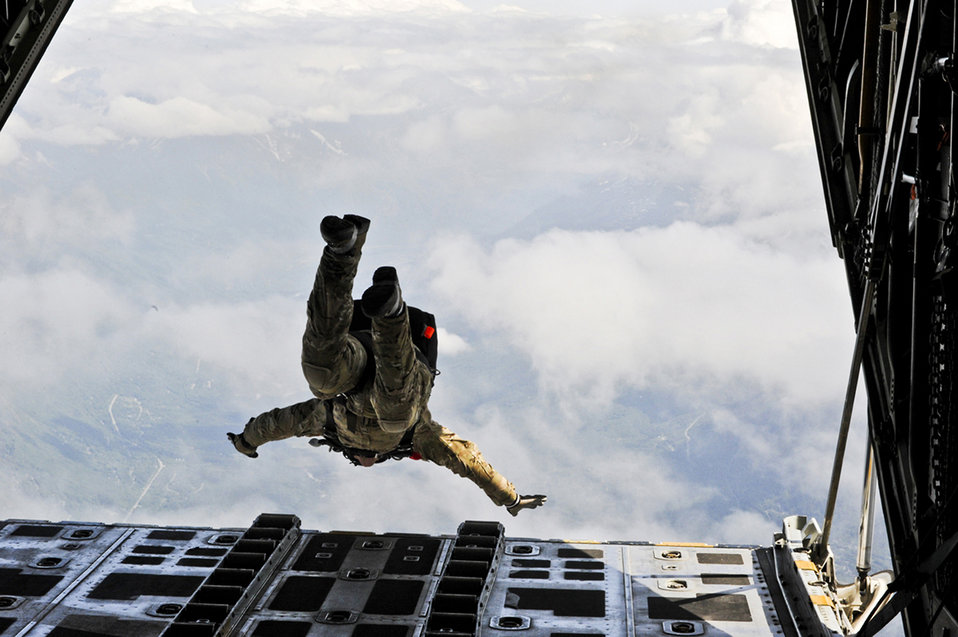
Air Force Week in Photos for July 08, 2011, feature Airmen around the world. In this photo by A1C Jack Sanders, an Alaska Air National Guard pararescueman performs a high-altitude jump from a Coast Guard C-130 Hercules during a training mission above Joint Base Elmendorf-Richardson, Alaska.